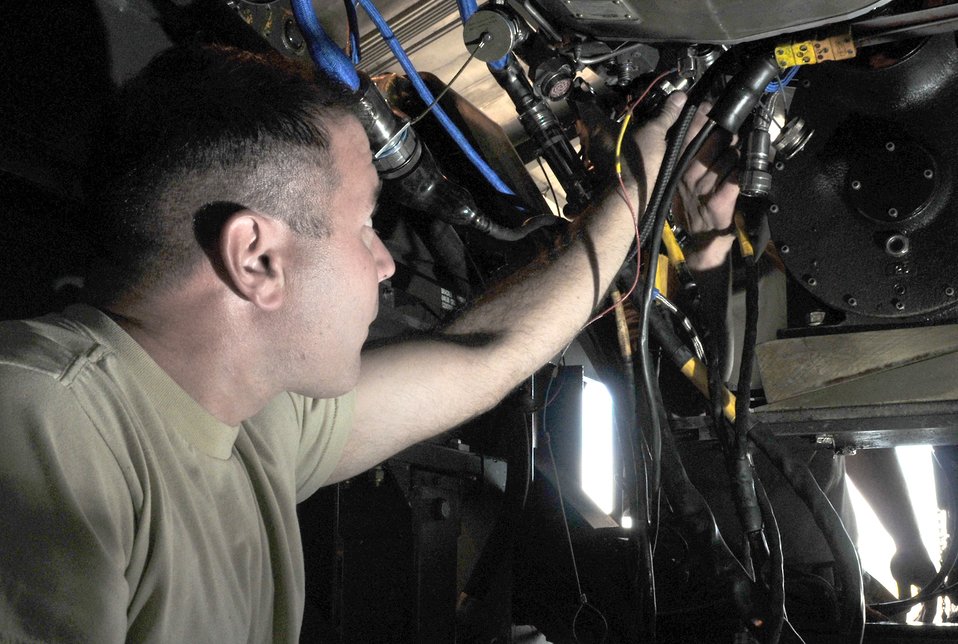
F-15 Eagle engine test run

Master Sgt. Joseph Whitley installs a new hose on an F-15 Eagle engine to troubleshoot an error code during an engine test run November 10, 2010, at the Florida Air National Guard base in Jacksonville International Airport, Fla.